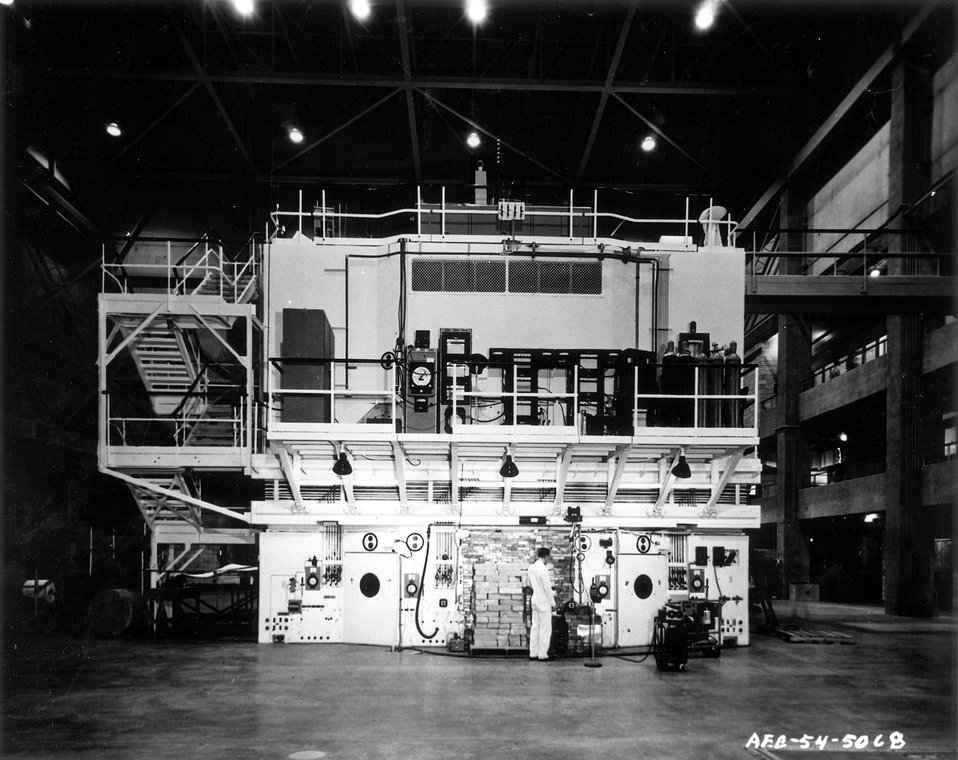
National Reactor Testing Station, Idaho... The North Face of the Materials Testing Reactor. Circa 1954.